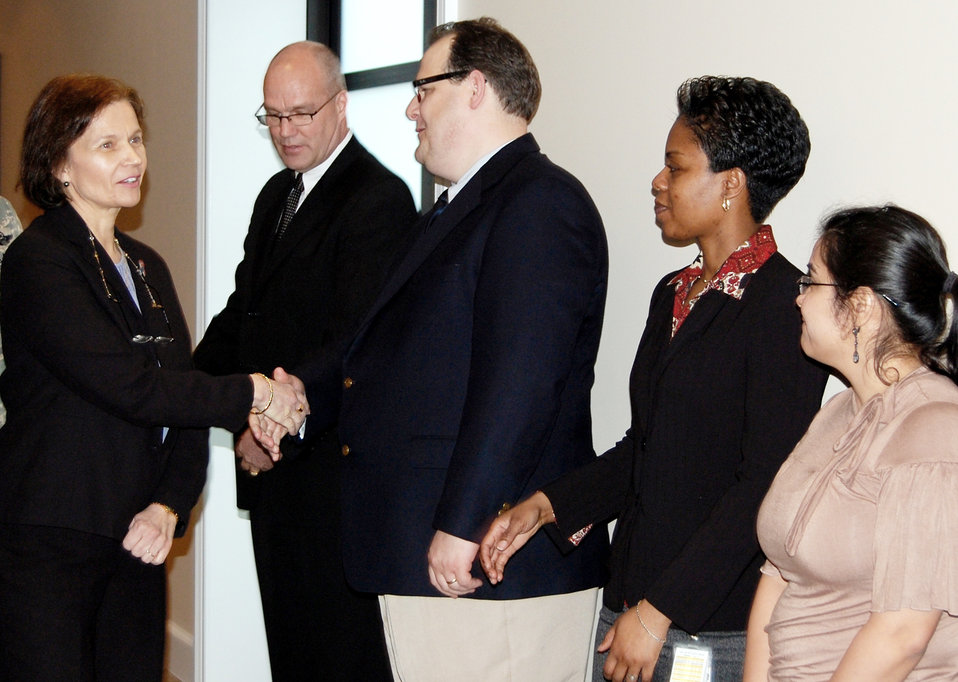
Dignified transfer

While visiting the Center for Families of the Fallen at Dover Air Force Base, Del., March 12, 2010, Eva-Marie Chandler, wife of Air Force Vice Chief of Staff Gen. Carrol H.